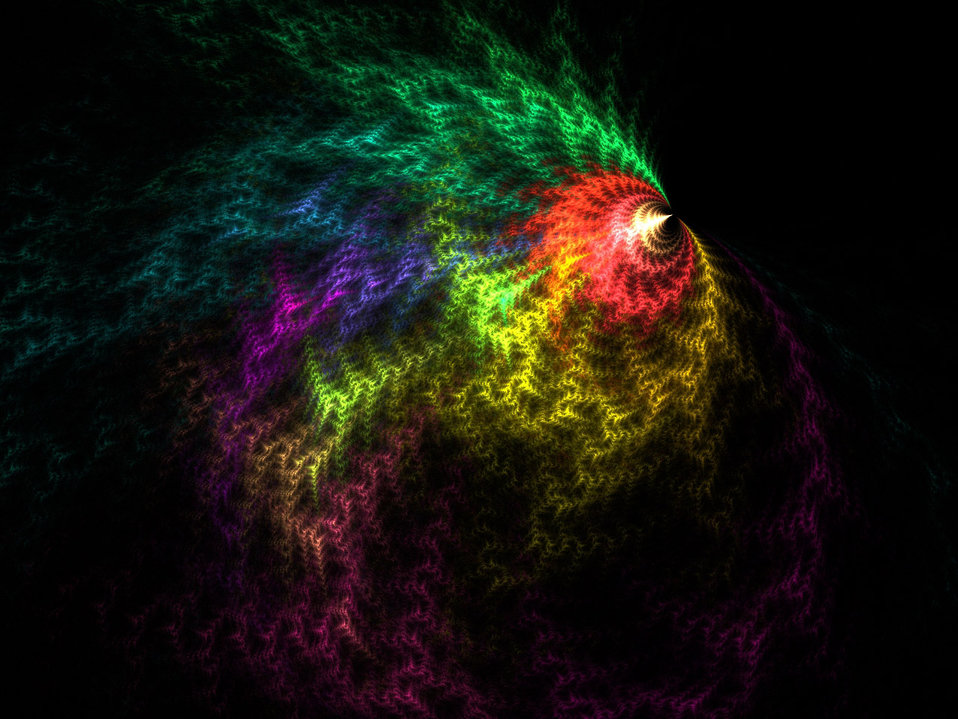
Spinning top

Fractal image like a spinning top in various bright colours.